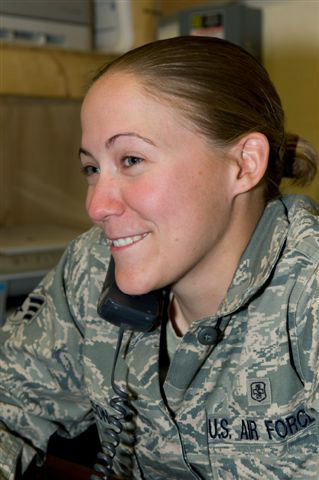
Senior Airman Ashley Jackson listens to President Barack Obama's Thanksgiving message

Senior Airman Ashley Jackson smiles as she listens to President Barack Obama's Thanksgiving message Nov. 26, 2009, at Forward Operating Base Morales-Frazier, Afghanistan. Airman Jackson, a medic with Provincial Reconstruction Team Kapisa, is originally from Lakeville, Minn. She is deployed from Eielson Air Force Base, Alaska.